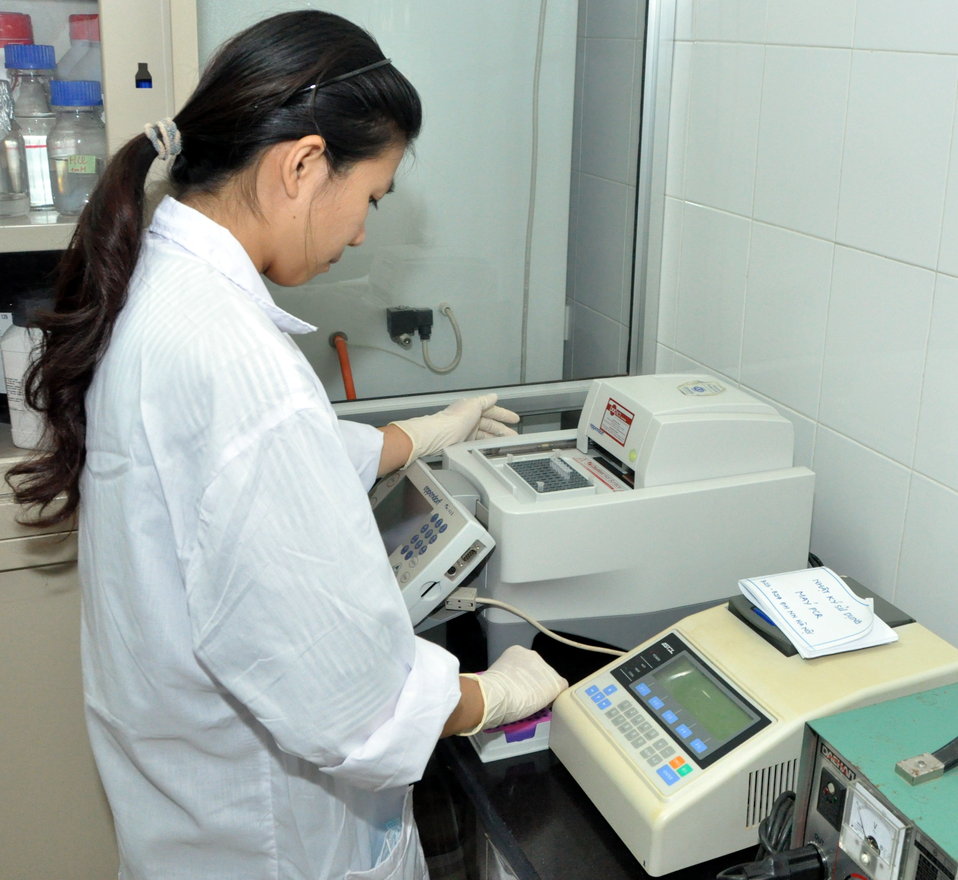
Animal virus detection lab training in Hanoi

Trainee learns how to detect viruses in Hanoi under a USAID program.